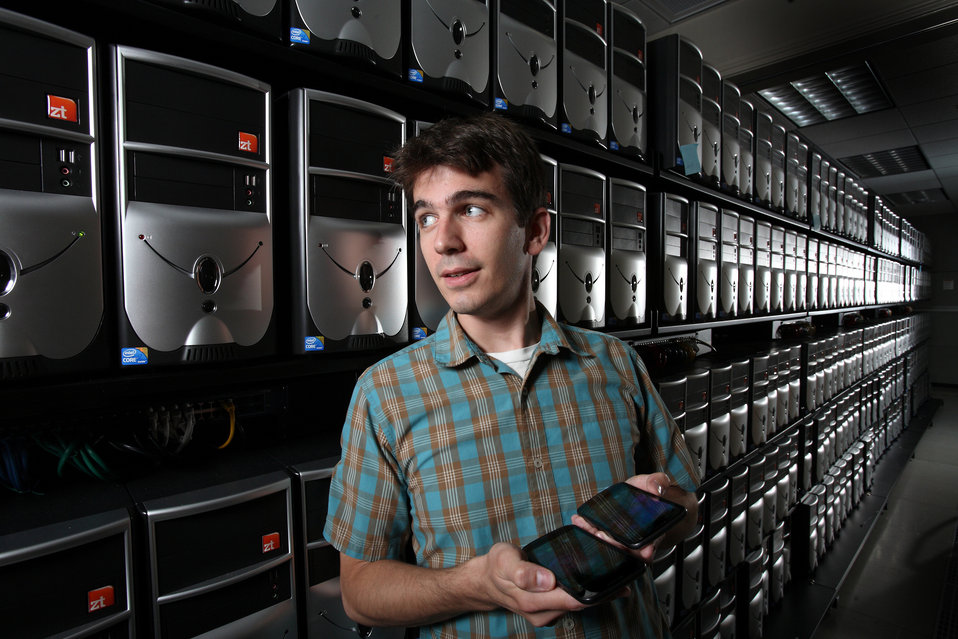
Sandia researcher holds two android smartphones, representing the virtual network of 300,000 such devices that he and other researchers are using to advance understanding of malicious computer networks on the internet.